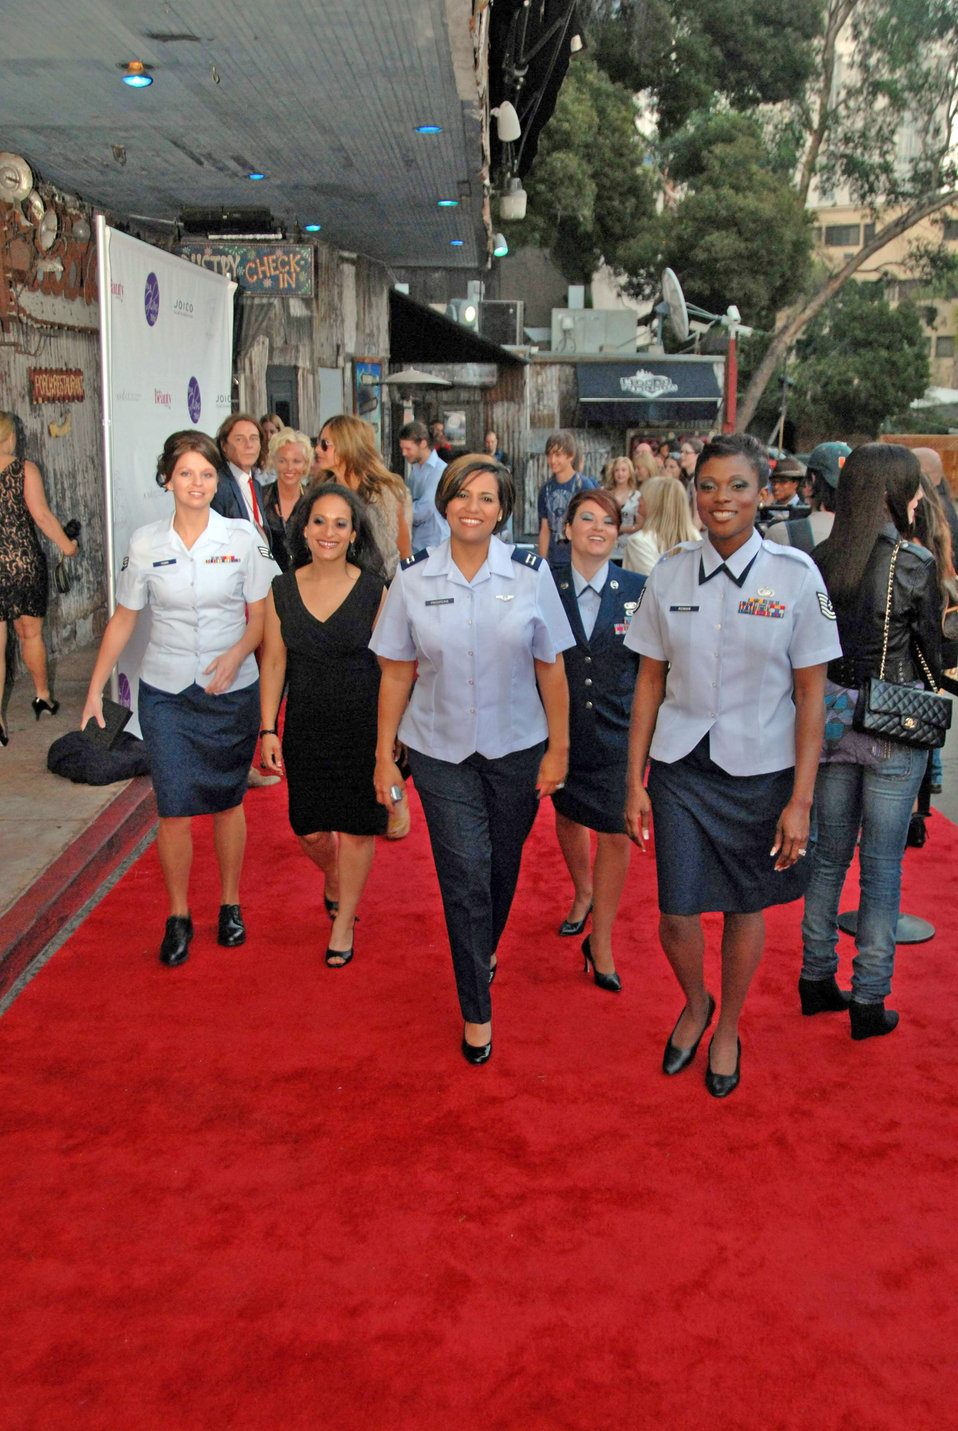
Air Guard women honored for their service

Five Air National Guard women were honored at the House of Blues in Los Angeles on Aug. 10. The women were recognized as